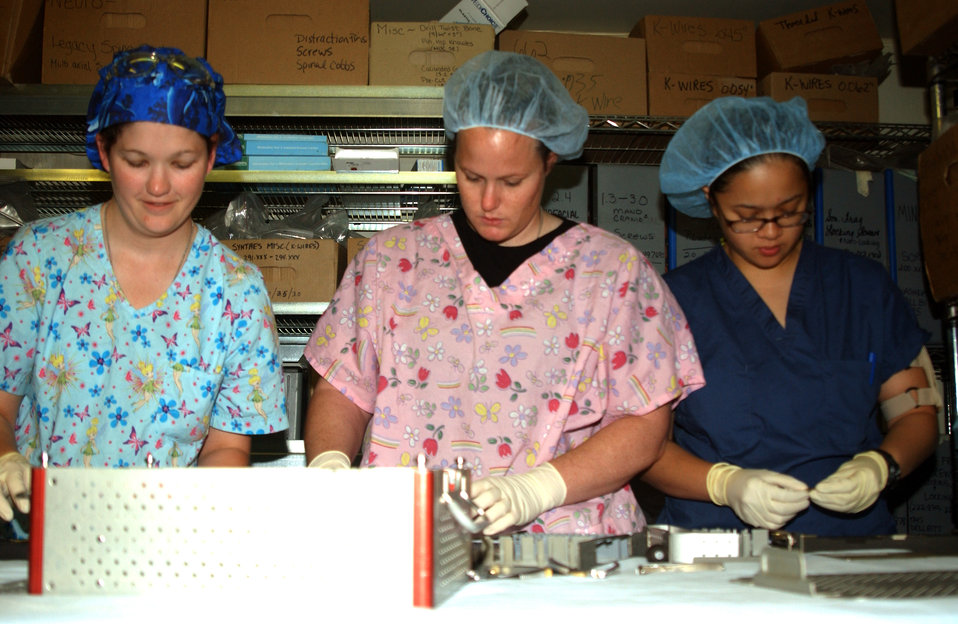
OR technicians help save lives in Iraq

(From left) Senior Airman Shannon Brito, Airman 1st Class Sara Moore and Staff Sgt. Myla Vizcarra prepare instruments that will be used in the operating room Oct. 14 at Balad Air Base, Iraq. The Airmen are operating room technicians assigned to the 332nd Expeditionary Medical Group.